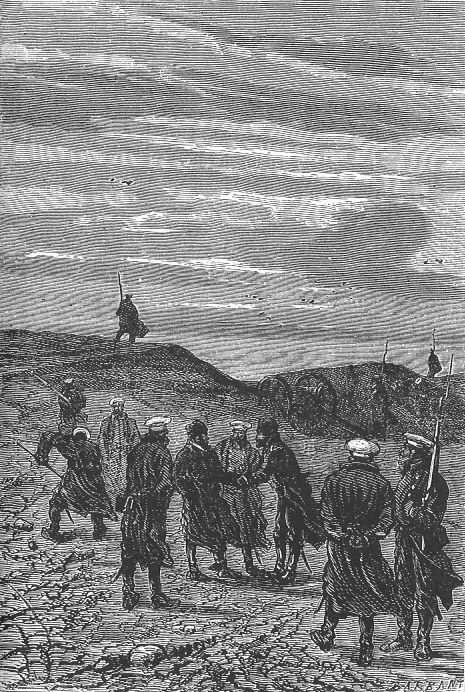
An illustration from the novel 'Michael Strogoff: The Courier of the Czar' by Jules Verne drawn by Jules Férat. Polski: Ilustracja powieści Juliusza Verne'a 'Michał Strogow, kurier carski' autorstwa Julesa Férata. Français : 'Michel Strogoff. Le courier du tzar', Jules Férat. Français : Partout il fut accueilli avec de cordiales félicitations.